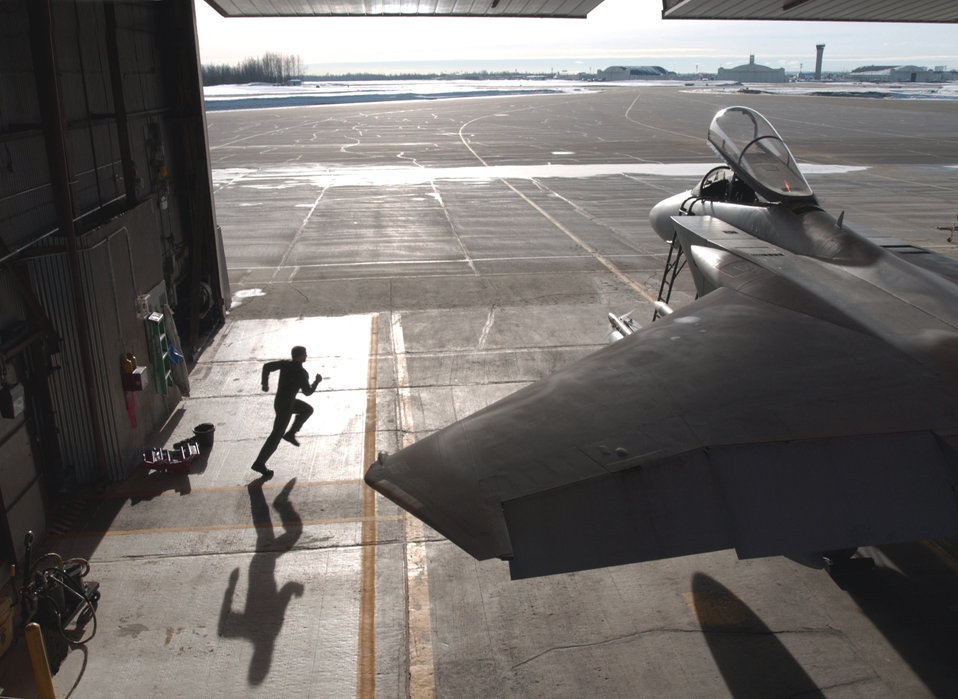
Operation Noble Eagle

ELMENDORF AIR FORCE BASE, Alaska -- Maj. Tom O'Berg sprints to an F-15 Eagle standing alert here. The 12th Fighter Squadron stands alert as part of Operation Noble Eagle, the defense of North American airspace. Within minutes of receiving a call reporting unidentified aircraft approaching U.S. airspace, he and other pilots will taxi their aircraft out of the combat alert cell and fly over Alaska's Chugach mountain range.